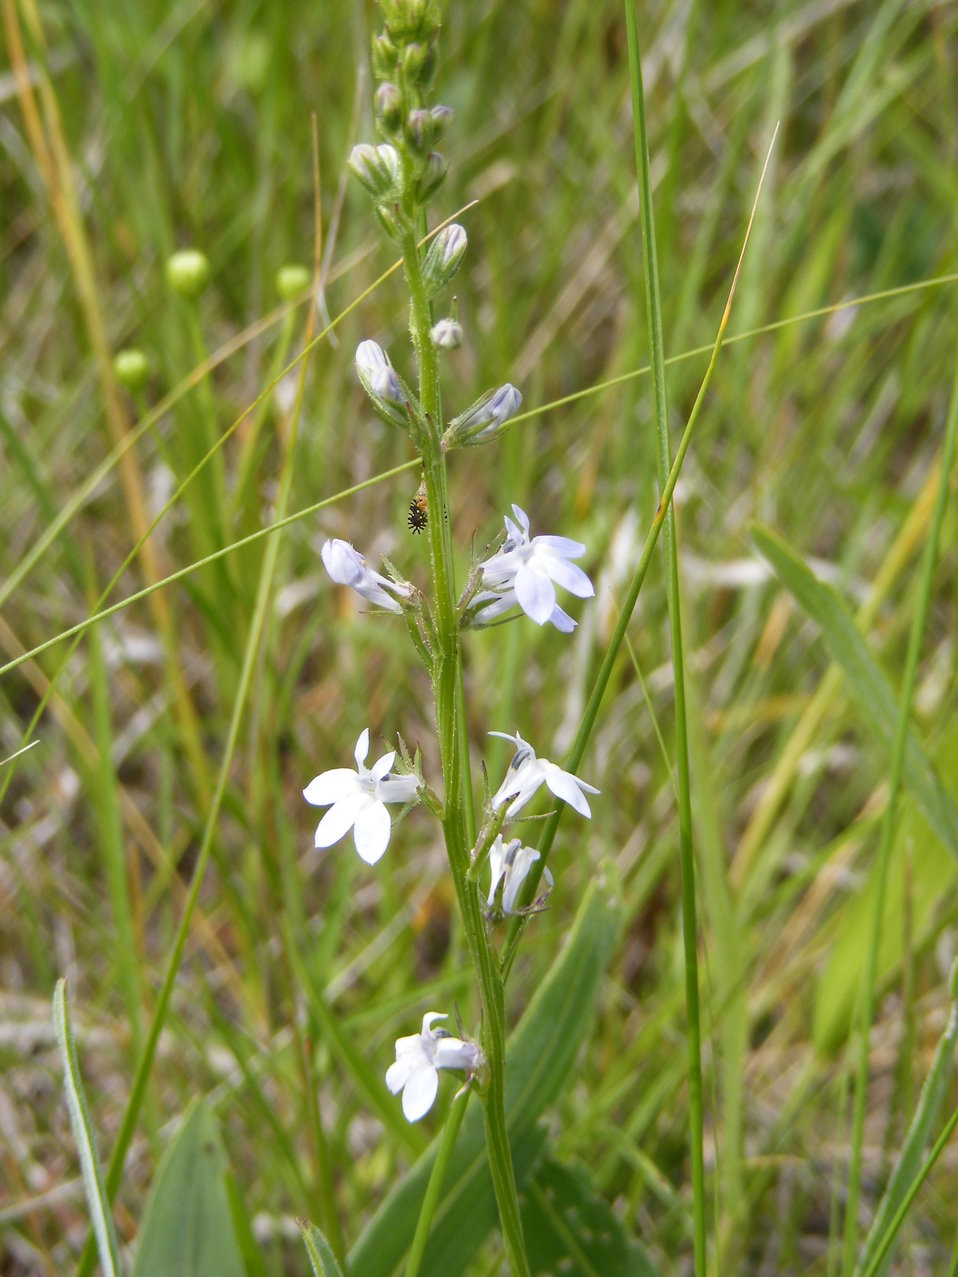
Spiked Lobelia

One of the many beautiful prairie flowers that can be seen in tallgrass prairies in NE South Dakota.